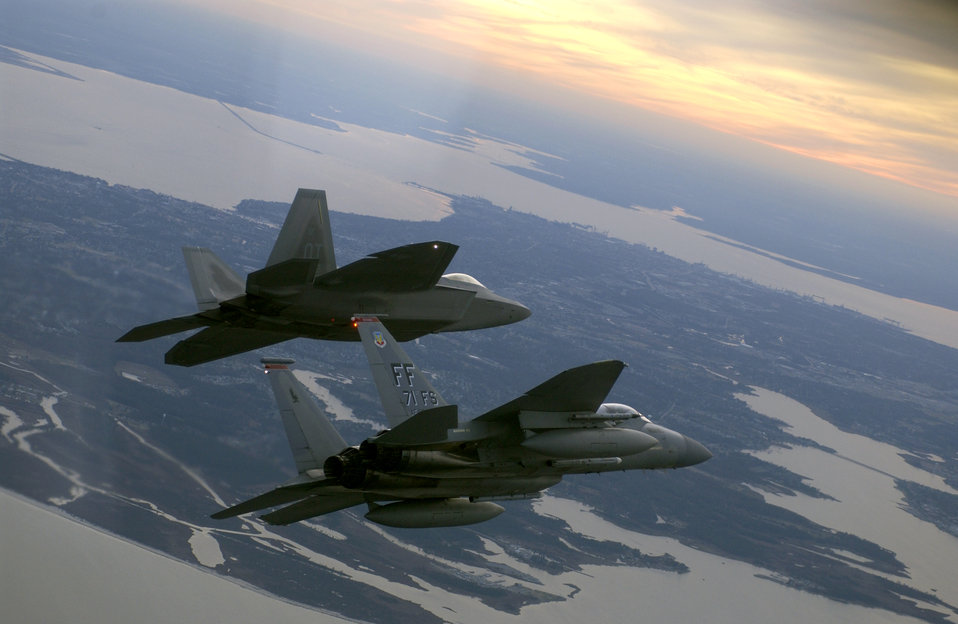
Celebrating 100 years of flight

KILL DEVIL HILLS, N.C. -- Lt. Col. Dave Rose flew the Air Force's new F/A-22 Raptor during a First Flight Centennial Celebration fly-by at the Wright Brothers National Memorial here Dec. 16. Maj. Robert Garland flew an F-15 Eagle from Langley Air Force Base, Va., and joined in formation after Rose's fly-by. Langley is slotted to be the home of the first operational squadron of F/A-22s by the end of 2004. Rose is from the 422nd Test and Evaluation Squadron at Nellis AFB, Nev.